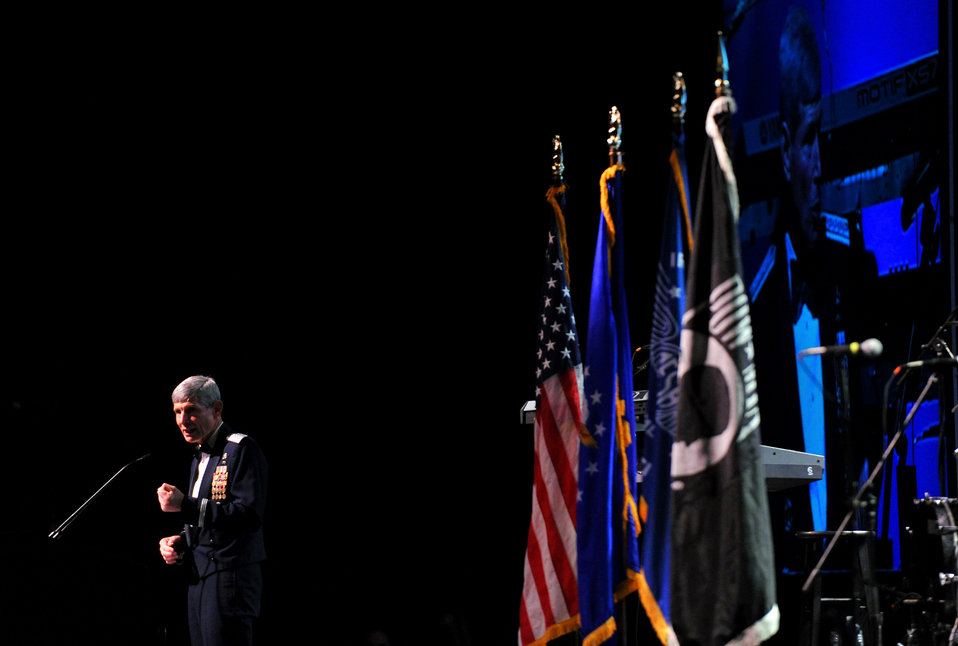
Air Force leaders laud AFSA, Airmen at gala

Air Force Chief of Staff Gen. Norton Schwartz discusses the future of the Air Force, the need for resiliency, and initiatives for supporting Airmen and their families at an Air Force Sergeants Association awards banquet July 27, 2011, at the Grand Hyatt Hotel in San Antonio. Airmen gathered in San Antonio to celebrate the 50th anniversary of AFSA at the association’s Professional Airmen’s Conference.